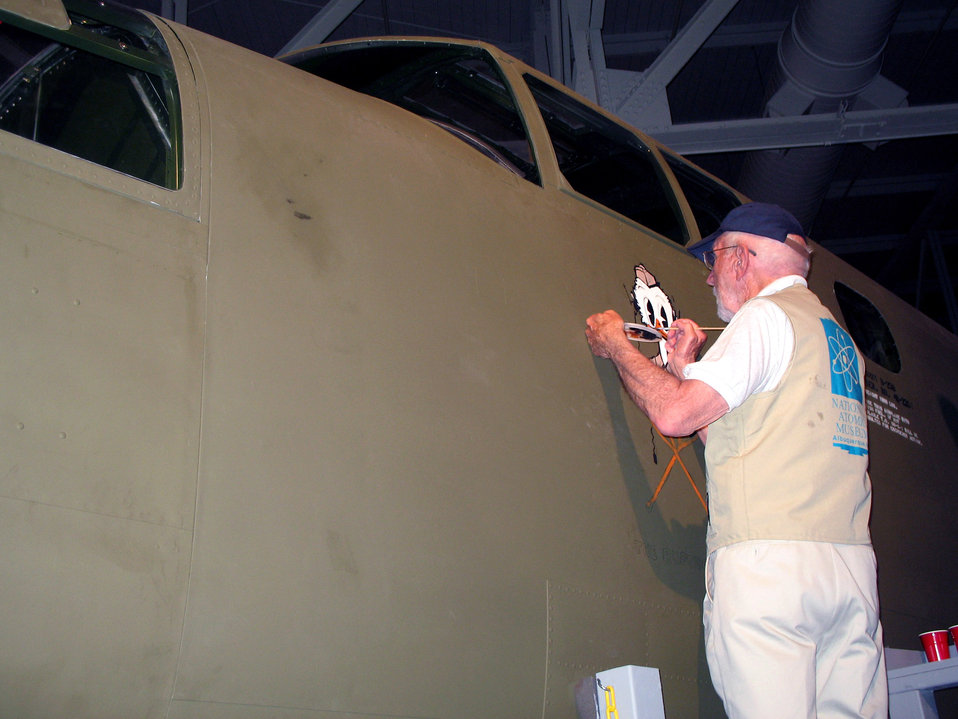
WWII veteran's artwork lives on at museum

Hal Olsen touches up the paint on a B-25 Mitchell Bomber April 19 at the Pacific Aviation Museum in Hawaii. In honor of the 65th anniversary of the Doolittle Raid over Tokyo, Mr. Olsen was recreating one of his original nose art pieces, for the B-25 flown by Lt. Ted Lawson, one of the pilots involved in the raid. The piece called